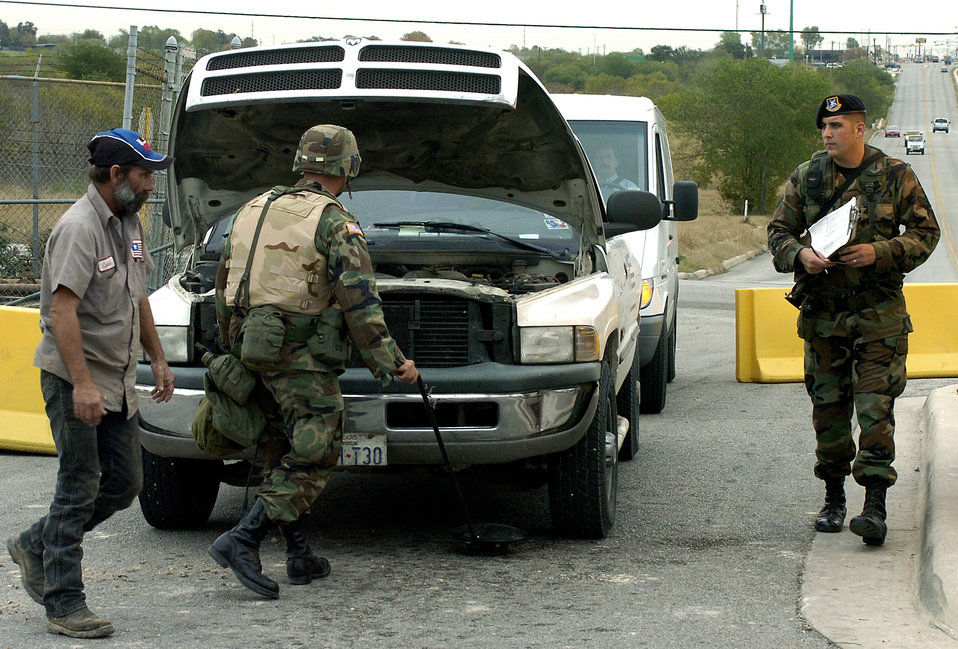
Soldiers deploy to Lackland for quick-reaction exercise

LACKLAND AIR FORCE BASE, Texas -- Army Specialist Ryan Moffenbier of the 4th Infantry Division out of Fort Hood, Texas, inspects a car here as Airman 1st Class Joshua Barnett of the 37th Security Forces Squadron here monitors the area during a quick reaction force exercise Dec. 8. The mission was to provide a flexible and responsive unit to a specific region in the event of a domestic threat or incident. The exercise here trained the Soldiers to prepare for homeland defense missions.